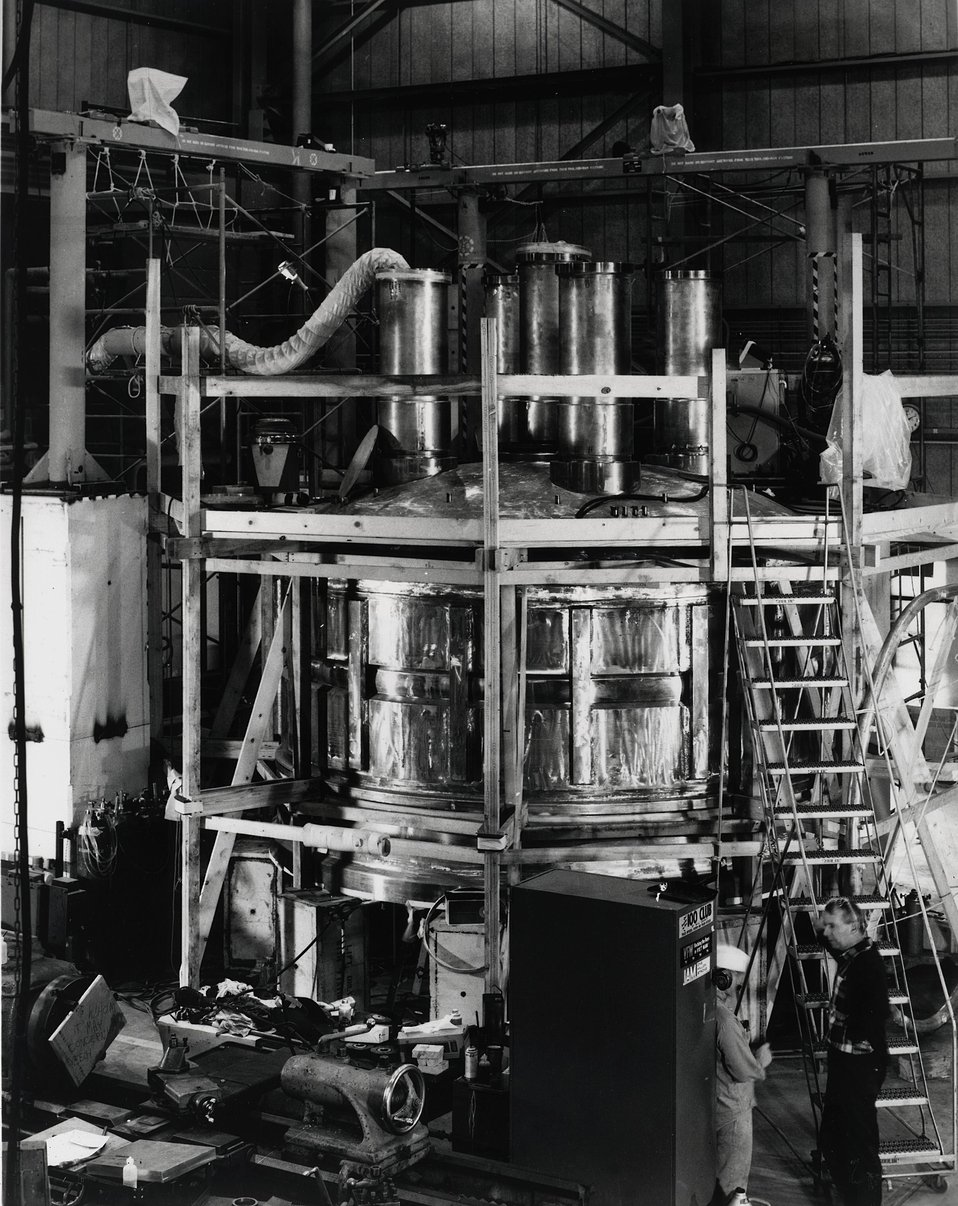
12-foot hydrogen bubble chamber.